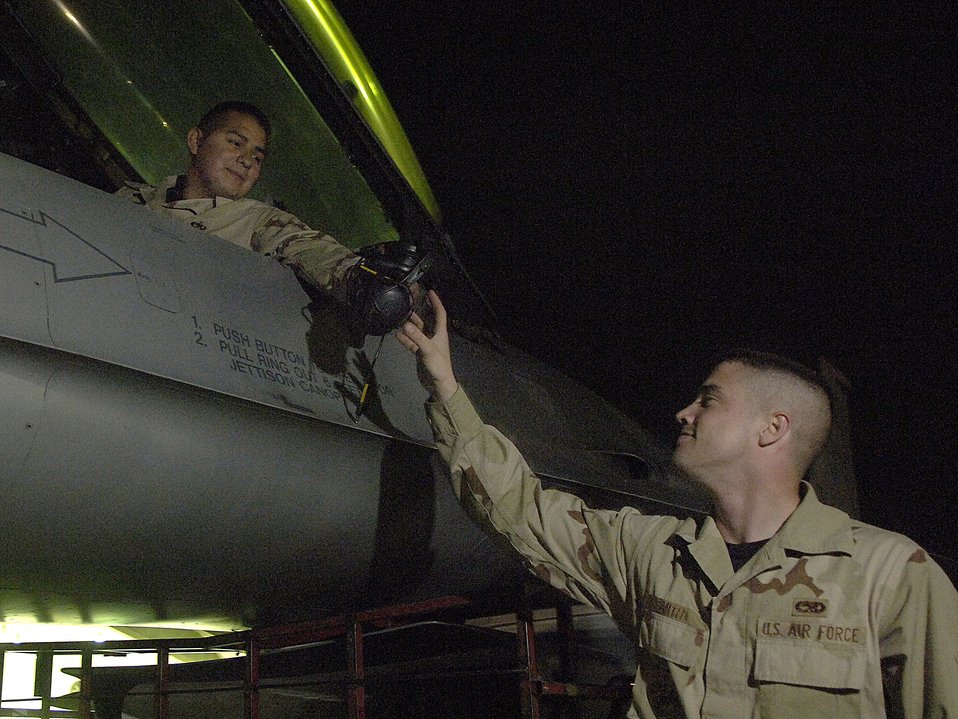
Arming the Falcons for fight

Staff Sgt. Jose Vuittonet hands hearing protection to Airman 1st Class Bruce Smith before completing engine run up checklists on an F-16 Fighting Falcon March 4 at Balad Air Base, Iraq. The Airmen are assigned to the 332nd Expeditionary Aircraft Maintenance Squadron.